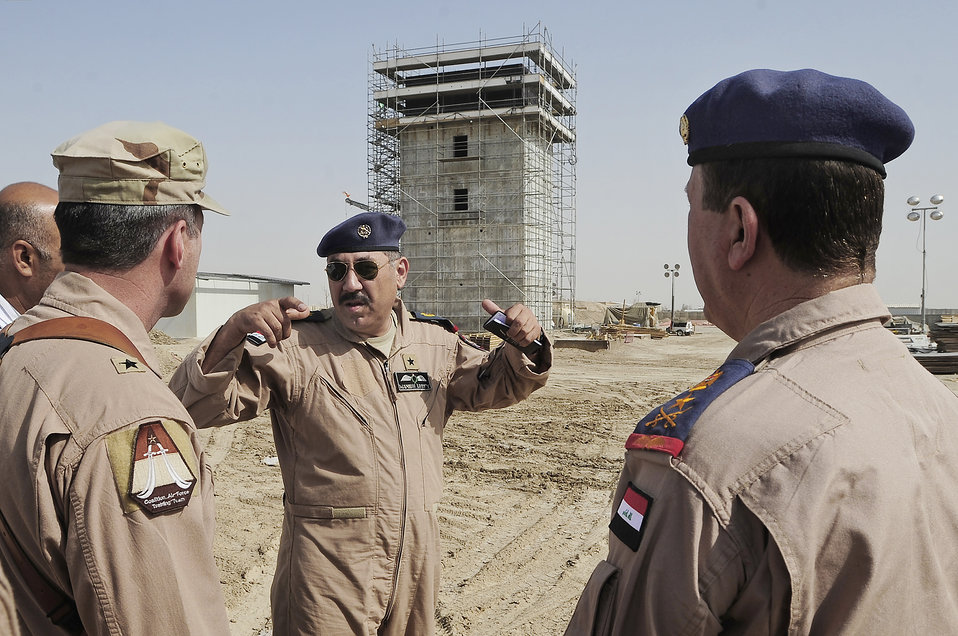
Iraqi, U.S. Air Force work hand in hand to support drawdown of forces

Maj. Gen. Robert Kane (left), Iraqi air force Staff Brig. Gen. Wamidh and Iraqi air force Commander Staff Lt. Gen. Anwar Hamad Amen Ahmed discuss the on-going construction of the new air traffic control tower Sept. 24, 2009, at Ali Base, Iraq. General Kane is the director, Iraq Training and Advisory Mission - Air Force, and General Wamidh is the Iraqi air force operations commander.